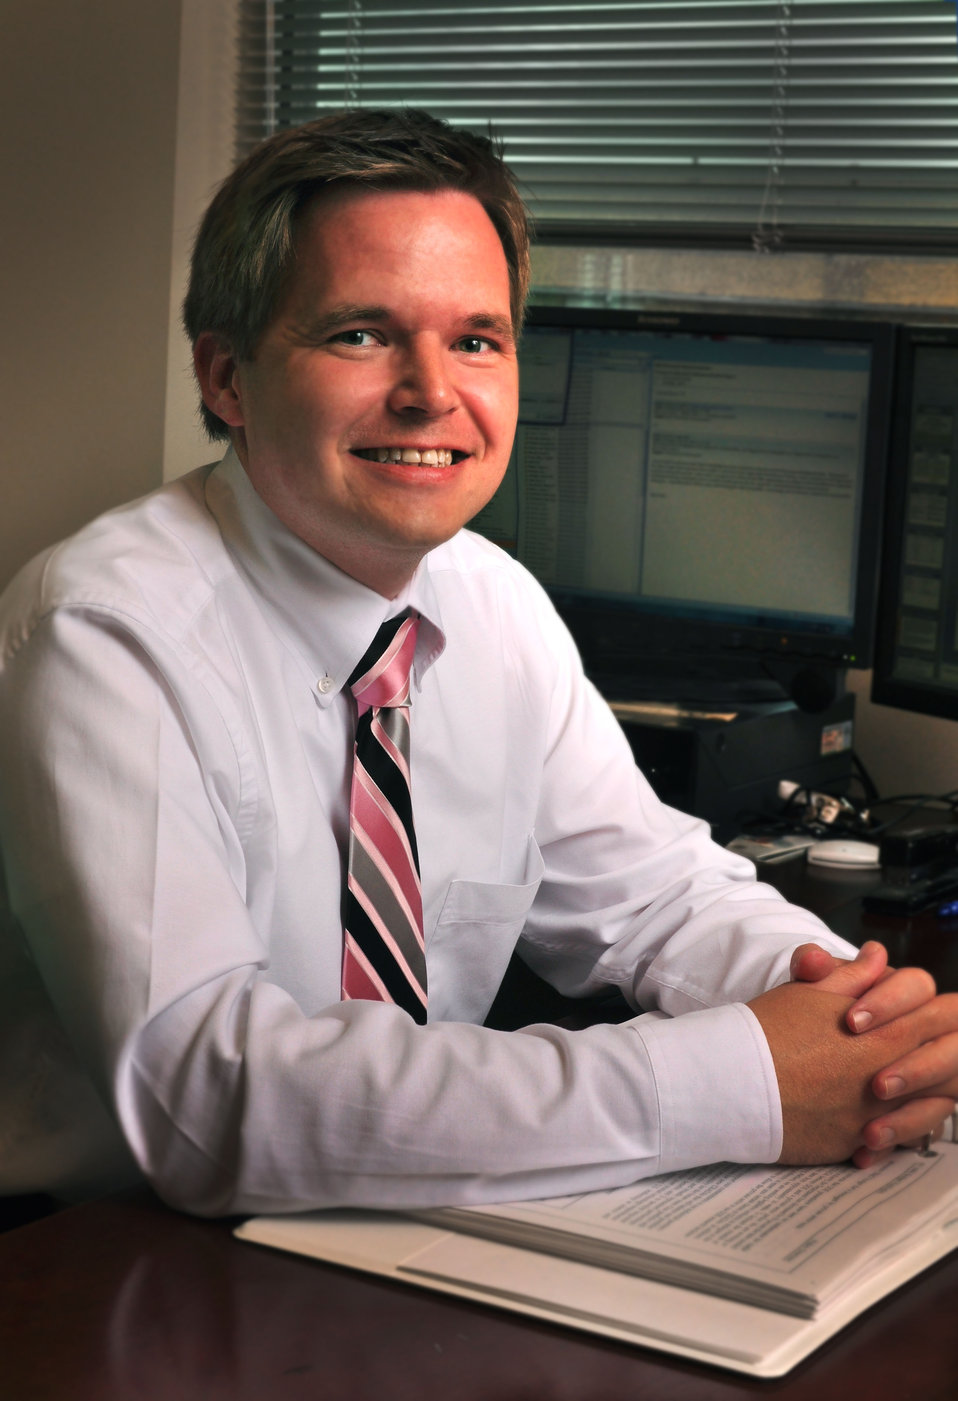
The U.S. Department of Energy Oak Ridge Office (ORO) has named Jamie Standridge as director of the Planning and Budget Division (PandBD) within the office of the Chief Financial Officer (CFO) at ORO.

13-056 DOE photo Lynn Freeny 5-17-2013 Oak Ridge Tennessee